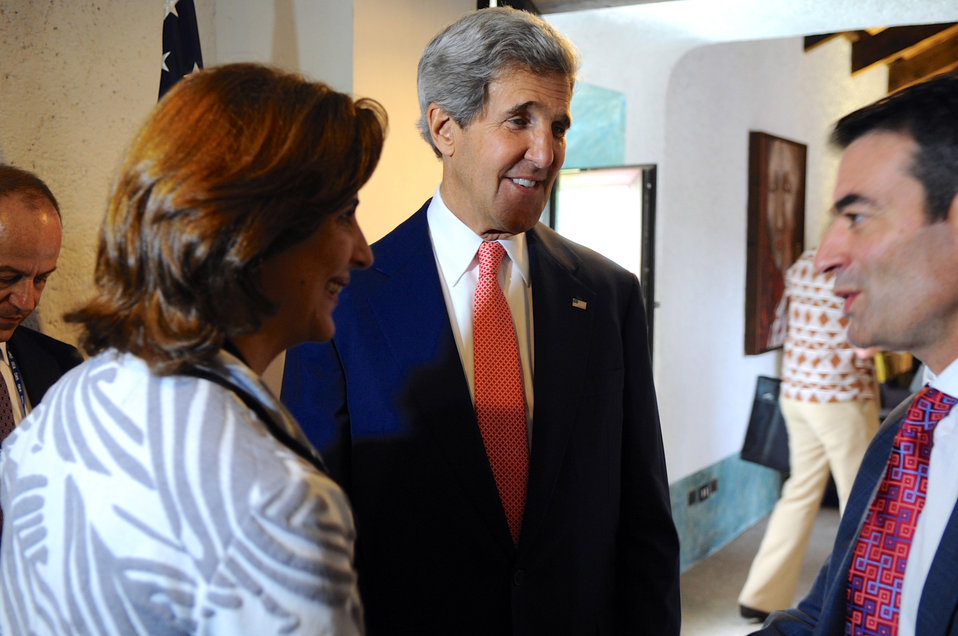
Secretary Kerry Speaks With Colombian Foreign Minister Holguin and Professor Cavallaro

U.S. Secretary of State John Kerry speaks with Colombian Foreign Minister Maria Angela Holguin and James Cavallaro, the U.S. candidate to the Inter-American Commission on Human Rights, before a session of the General Assembly of the Organization of American States in Antigua, Guatemala, on June 5, 2013.